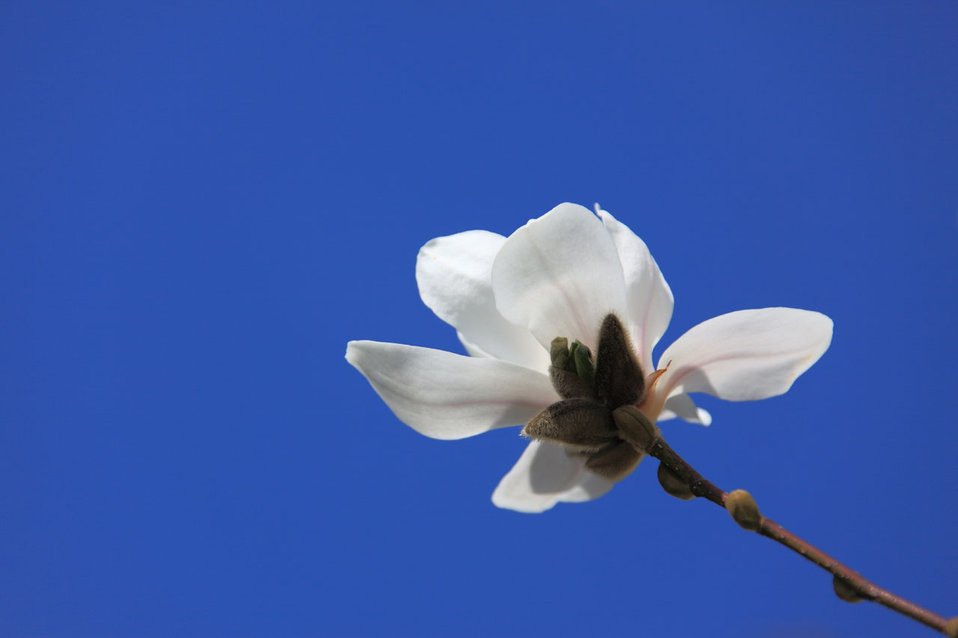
Magnolia flower

Single magnolia flower against blue sky.